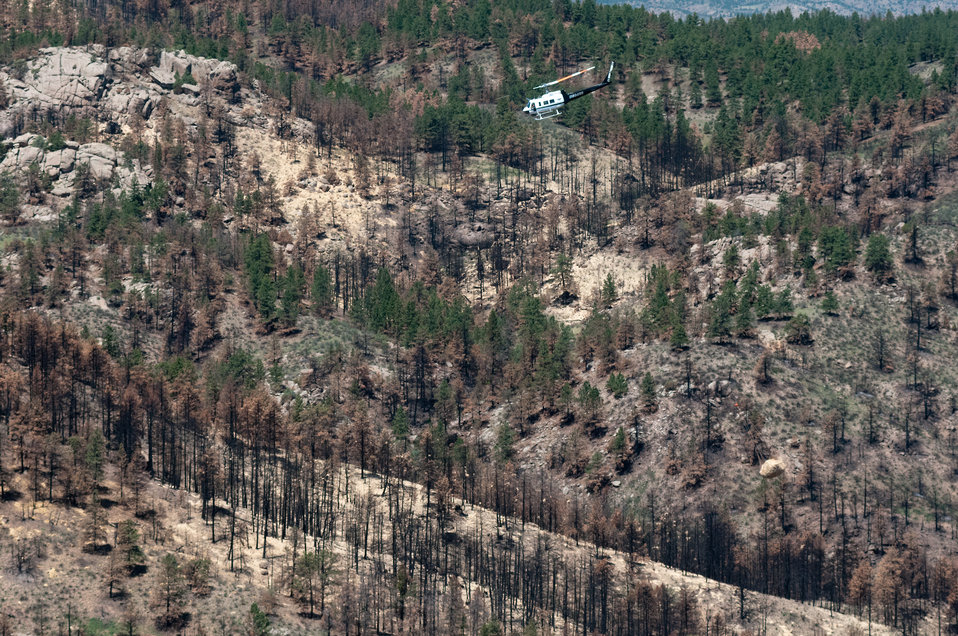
Mountain West Helicopter pilot Thierry Richards, releases one ton of straw from his Bell UH-1H (2-blade rotor) helicopter on to a burned out area of the Poudre Canyon mountainside near Fort Collins, Colo., on Friday, July 20, 2012. This is an aerial application of straw will mitigate soil and ash runoff from the mountainous terrain leading to Seaman Reservoir, drinking water resource for the City of Greeley. Forest Service lands receive straw, while private and other lands receive a seed mix and straw to promote ground cover plant growth on ash-covered lands. In total, 1,800 tons of straw will be applied during the 14-day operation. One quarter of the cost was paid by the City of Greeley and the U.S. Department of Agriculture funded the remainder. The Hewlett Gulch Fire was started by a camper’s alcohol stove, on May 14, at the saddle of a picturesque mountain ridge along the Hewlett Gulch Trail of Poudre Canyon, in the Roosevelt National Forest, 60 miles north of Denver. At it’s peak more than 400 firefighters were battling fires being pushed by 50 mph winds that helped blacken over 12-square-miles of dry ground cover, brush and trees. Many of the trees were already dead and tinder dry from beetle-kill. Their efforts have successfully kept water in the reservoir clean and clear, while downstream water flow has gone from famous Colorado clear water to nearly black flows of water heavily laden with ash, silt, and burnt debris that recent thunderstorms have already washed down from the mountainsides.